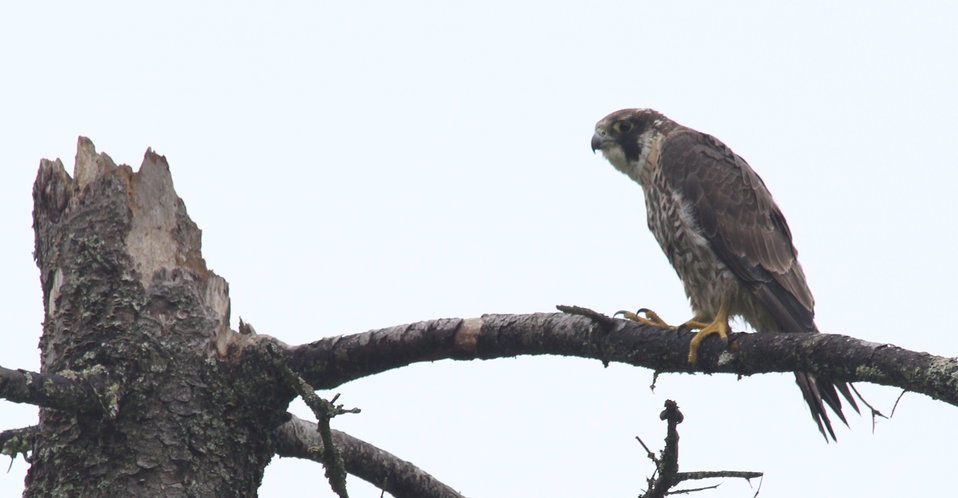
Peregrine Falcon

Metinic Island, Maine Coastal Islands NWR. Summer with the Seabirds blog: mainecoastalislands.wordpress.com/2010/07/23/metinic-isla...